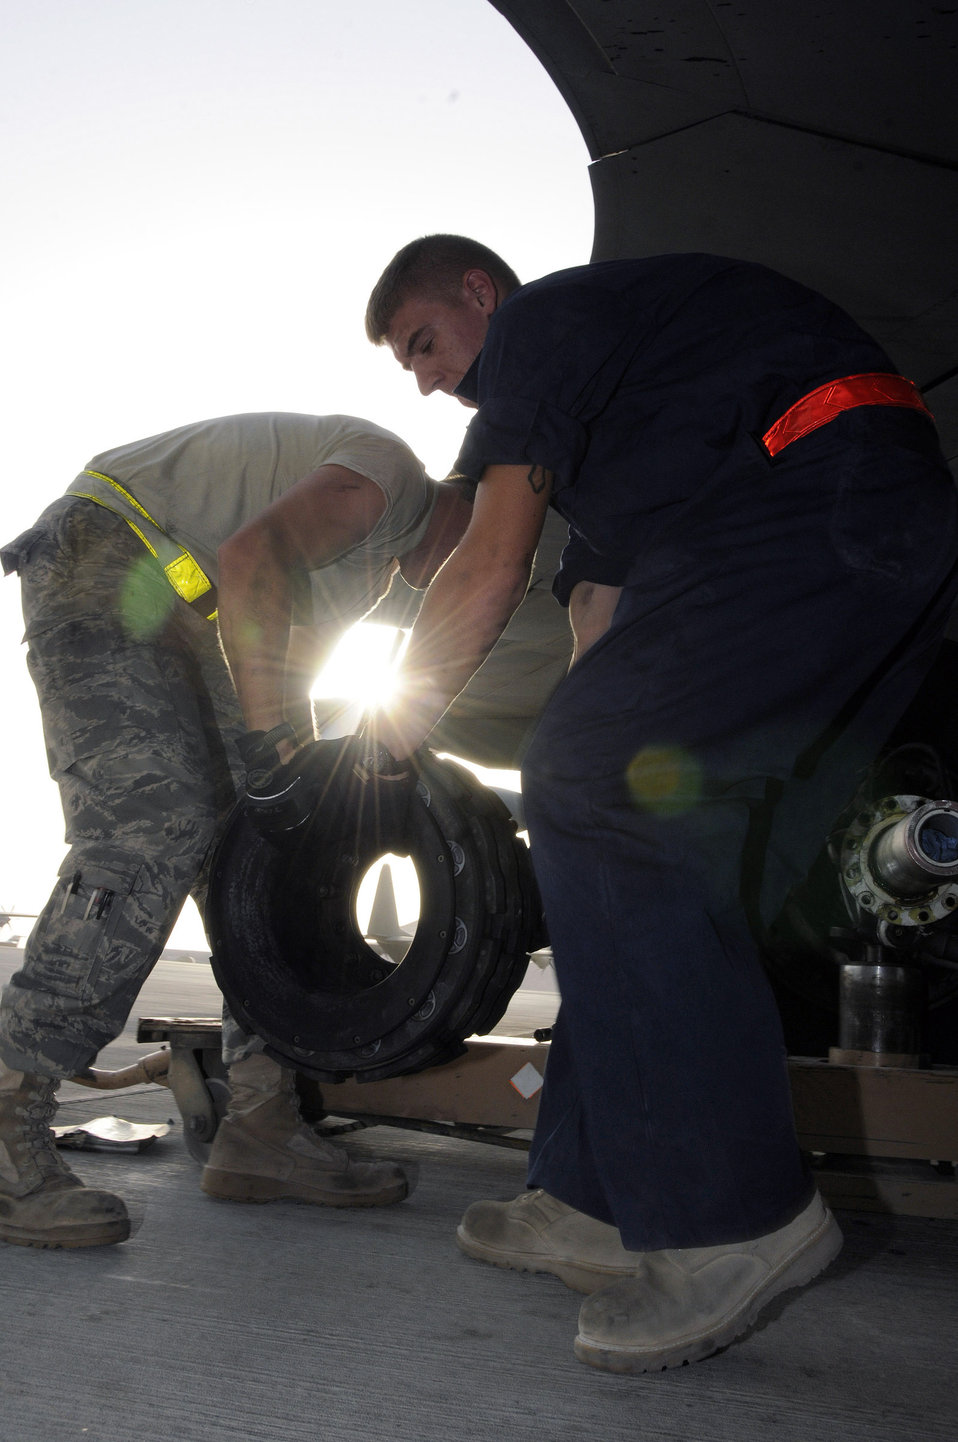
Brake it down

Tech. Sgt. Chris Reiter and Airman 1st Class Ryan McMillen move an unserviceable brake unit from a KC-135 Stratotanker Sept. 28 at an air base in Southwest Asia. The brake set had to be replaced when a crack in the heat shield was detected during a post-flight inspection. Sergeant Reiter, a native of Farmington, N.M., is deployed from Fairchild Air Force Base, Wash. Airman McMillen is from Warsaw, Ill., and deployed from McConnell AFB, Kan. Both are assigned to the 379th Expeditionary Aircraft Maintenance Squadron.